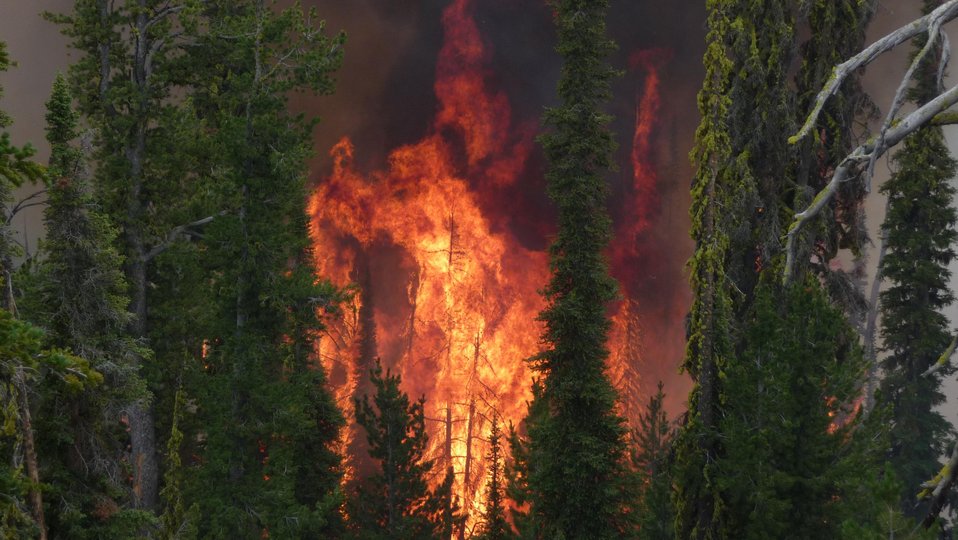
The Thunder City Fire in the Payette National Forest near Stibnite, ID began on Jul. 19, 2013 by lightning and has consumed approximately 1, 400 acres and is approximately 15% contained.